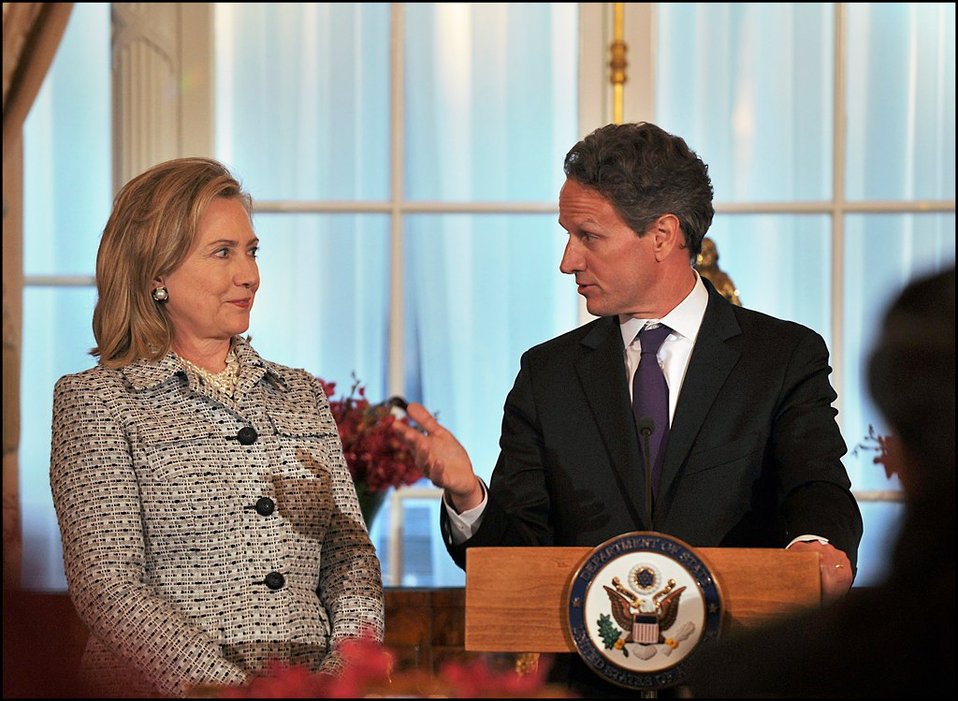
U.S.-China Strategic and Economic Dialogue

Secretary Geithner and Secretary Clinton delivered toasts at an S&ED banquet at the State Department on Monday evening.